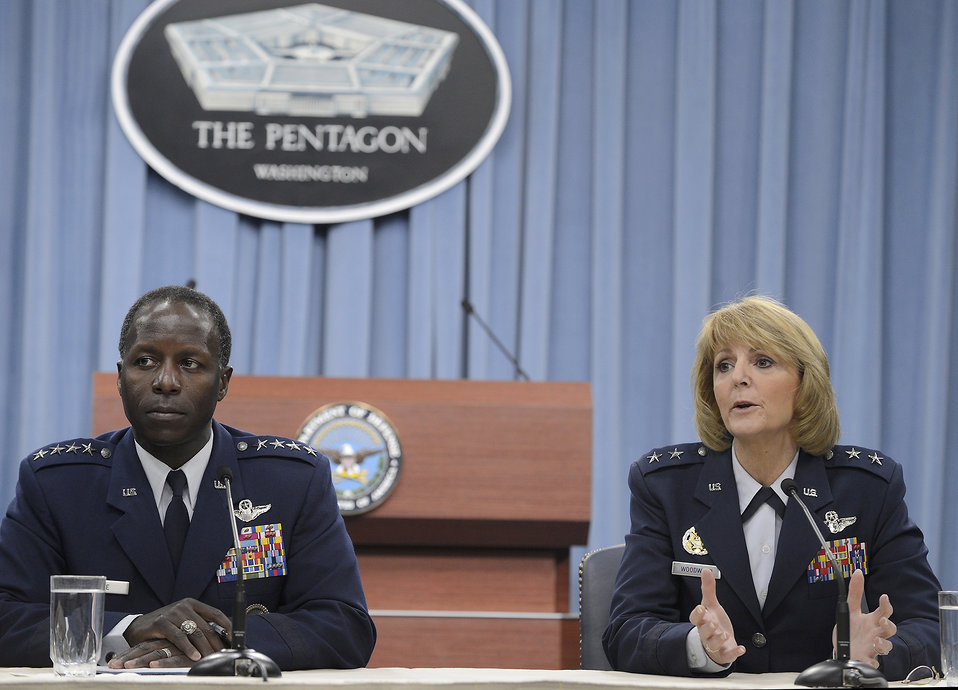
BMT sexual misconduct investigation findings

Gen. Edward Rice Jr., commander of Air Education and Training Command, answers questions with Maj. Gen. Margaret Woodward, Air Force Chief of Safety and commander of Air Force Safety Center at Kirtland Air Force Base, N.M., during a Pentagon press briefing on Nov. 14, 2012. Rice presented the findings relating to Woodward's investigation into allegations of sexual misconduct at Basic Military Training.